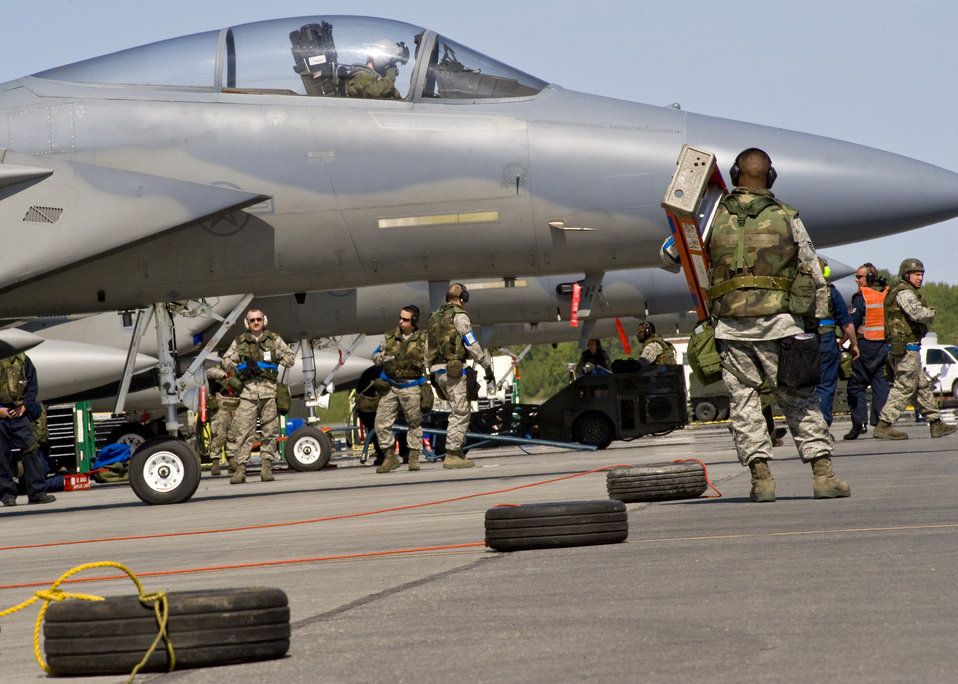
Polar Force readiness

Maintainers from the 19th Aircraft Maintenance Unit prepare an F-15 Eagle for take-off May 19 during Polar Force 09-05 at Elmendorf Air Force Base, Alaska.